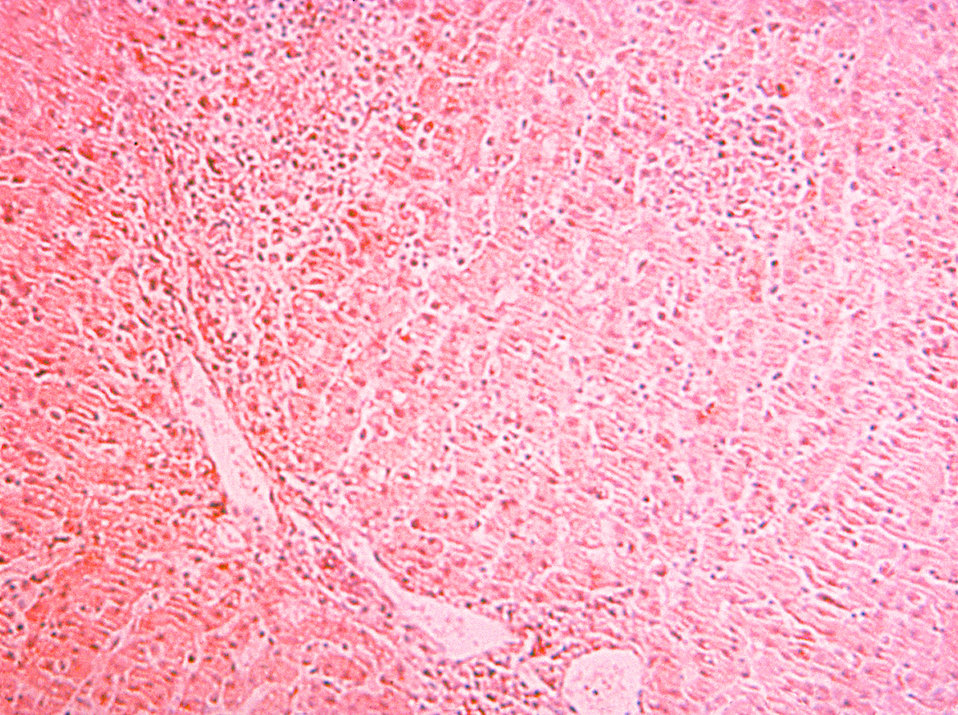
A photomicrograph demonstrating the histopathologic changes in liver tissue due to Salmonella typhi bacteria.